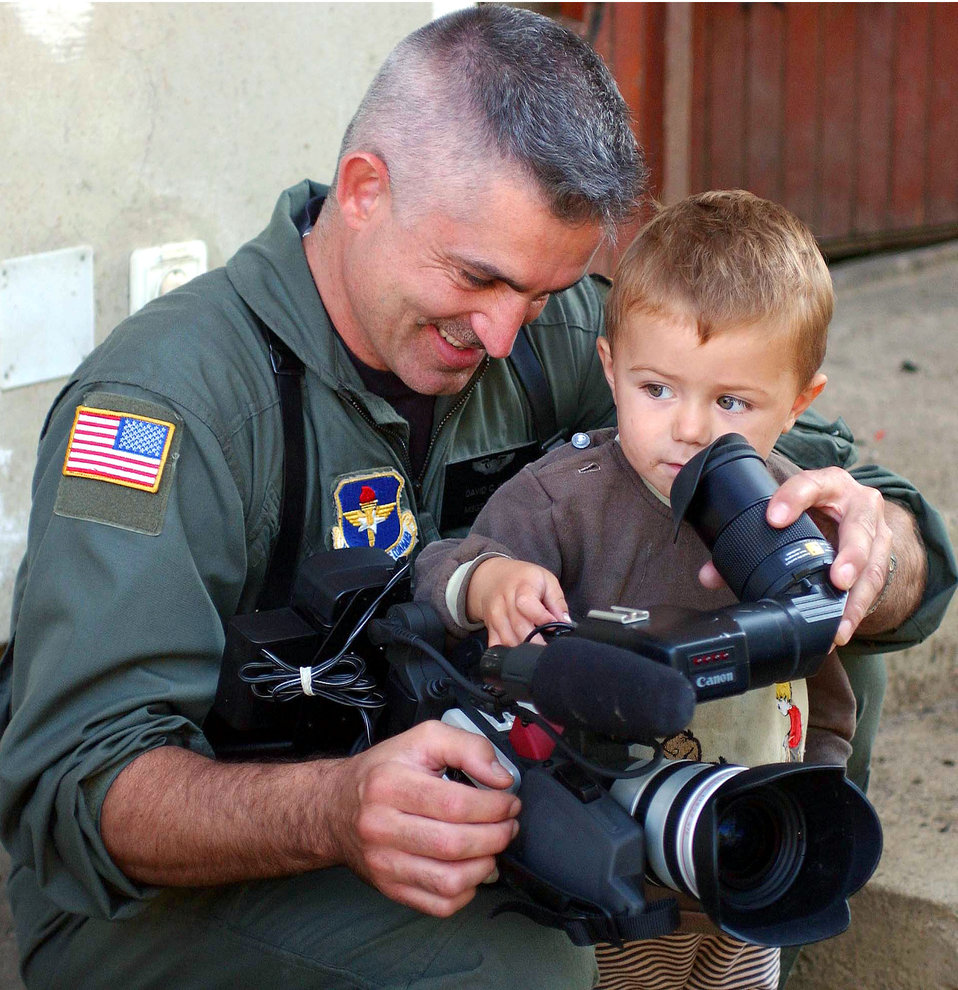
Video show

BANJA LUKA, Bosnia-Herzegovina (AFPN) -- Master Sgt. Dave Goss, a videographer, takes time to show off his camera to a local resident during Operation Timberwolf on Sept. 18. The three-week operation involved going house-to-house searching for weapons. Goss is assigned to the 401st Air Expeditionary Wing's Combat Camera team at Camp Butmir, Bosnia-Herzegovina.